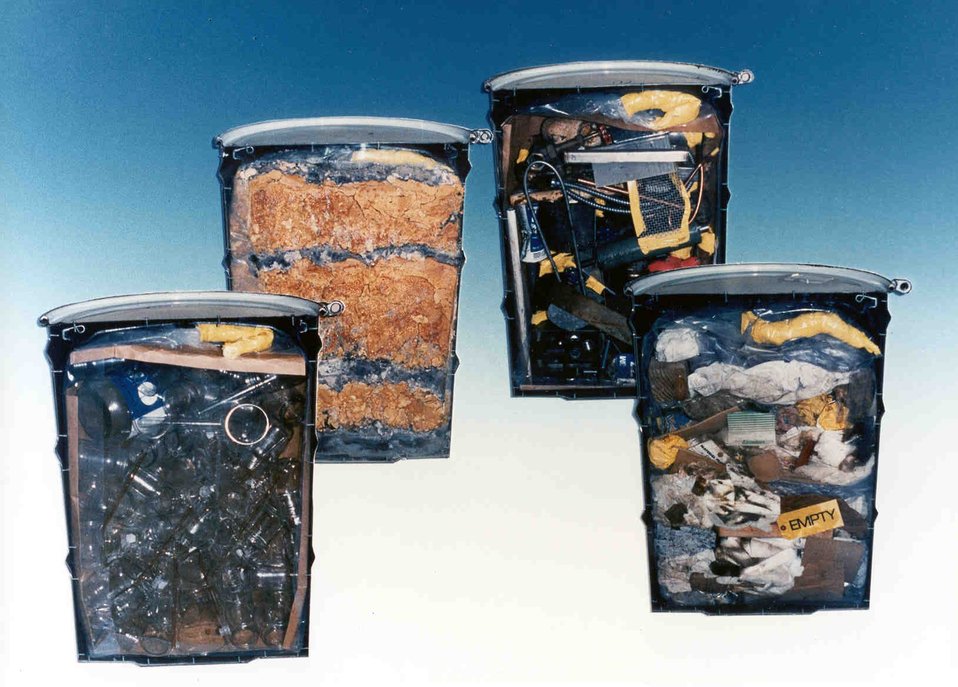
AMWTP Disposes Problematic Waste With Crushing Success

In the Treatment Facility, drums are size reduced by a machine called the Supercompactor. The only machine of its kind in the United States, this behemoth delivers 4 million pounds of force, capable of smashing a 55 gallon drum full of radioactive debris waste into a puck about three inches tall. Recently, by taking advantage of available Supercompactor time, the Advanced Mixed Waste Treatment Project (AMWTP) was able to accelerate the processing of these problematic drums, resulting in an overall volume reduction of more than 100 cubic meters.